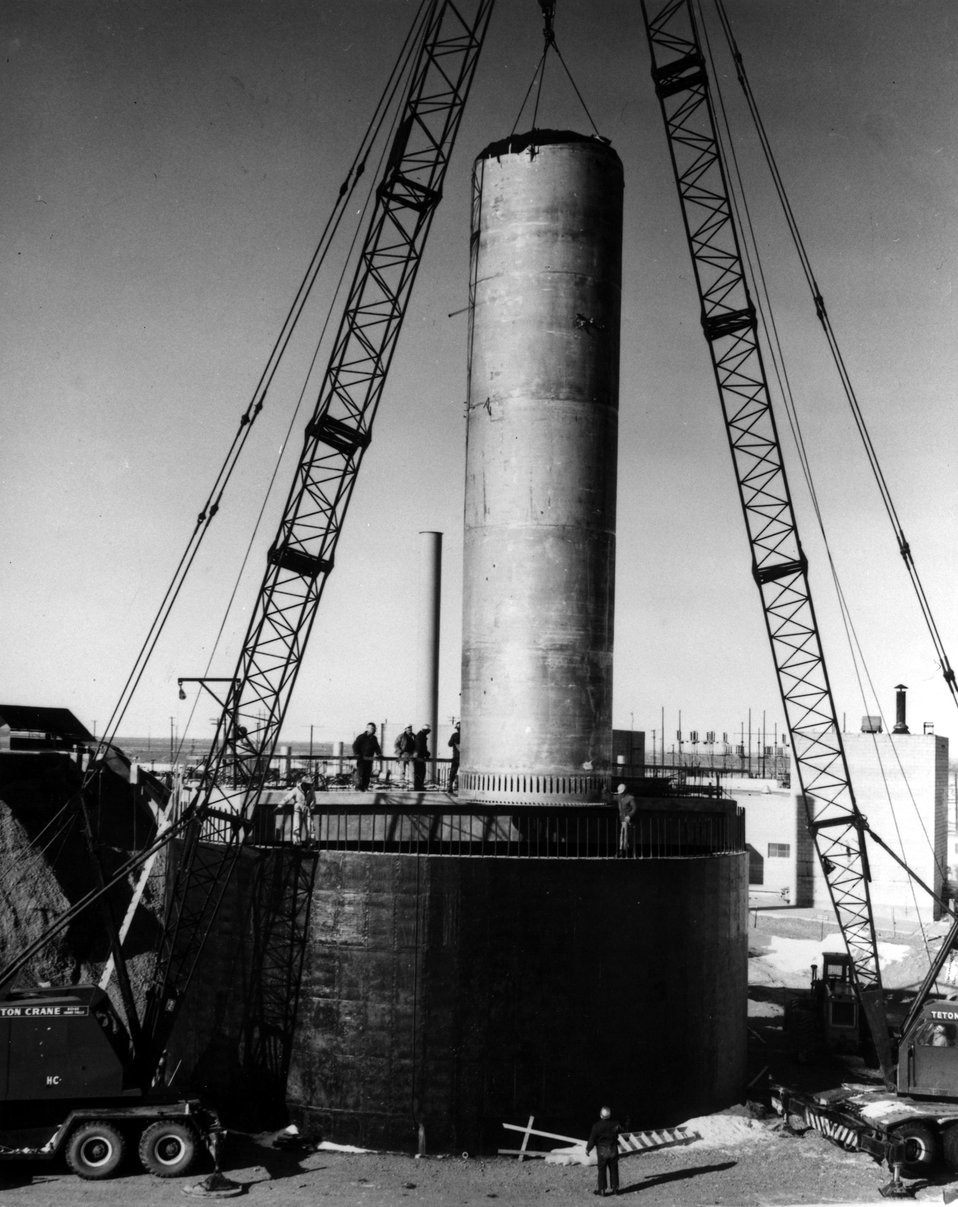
Concentrating High-Level Radioactive Wastes... New methods of concentrating high-level radioactive wastes into easier-to-store solids are being developed at the AEC's National Reactor Testing Station in Idaho. Circa 1971.